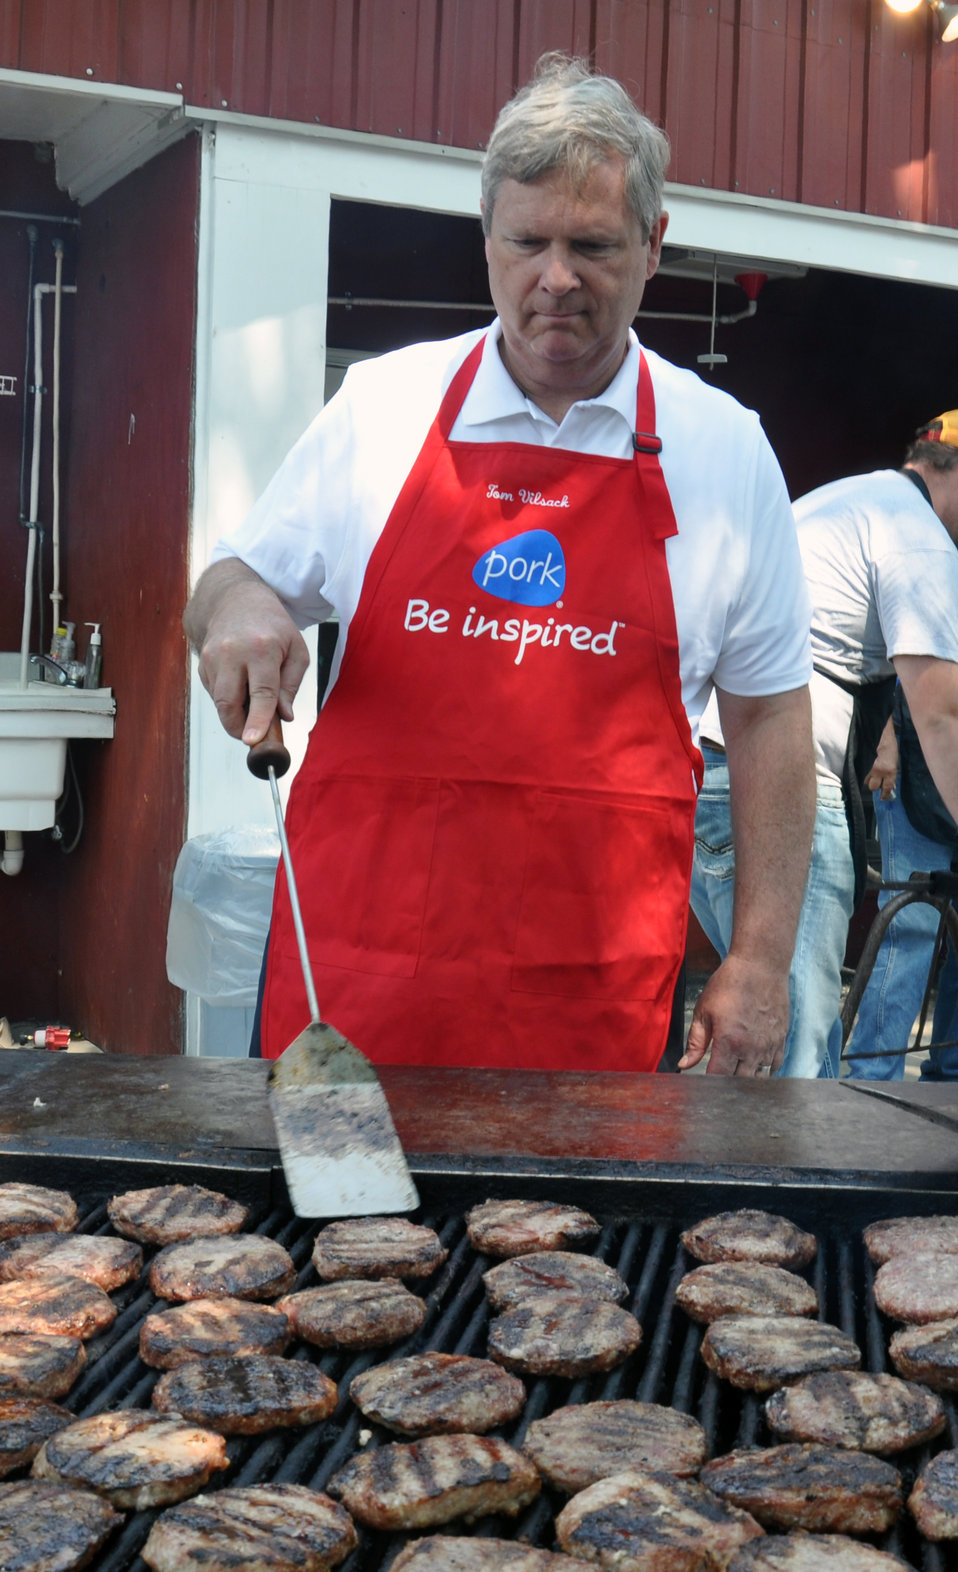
Agriculture Secretary Tom Vilsack flips hamburgers during his visit to to the Iowa State Fair in Des Moines, Iowa, on Thursday, August 16, 2012.

The Secretary was in Iowa As part of continuing steps by the Obama Administration to assist livestock producers in response to the historic drought. USDA will utilize nearly $16 million in financial and technical assistance to immediately help crop and livestock producers in 19 states to cope with the adverse impacts of the historic drought. In addition, USDA will initiate a transfer of $14 million in unobligated program funds into the Emergency Conservation Program. These funds can be used to assist in moving water to livestock in need, providing emergency forage for livestock, and rehabilitating lands severely impacted by the drought. Together these efforts should provide nearly $30 million to producers struggling with drought conditions.Most recently, Secretary Vilsack signed disaster designations for an additional 44 counties in 12 states including Iowa as primary natural disaster areas due to damage and losses caused by drought and excessive heat.